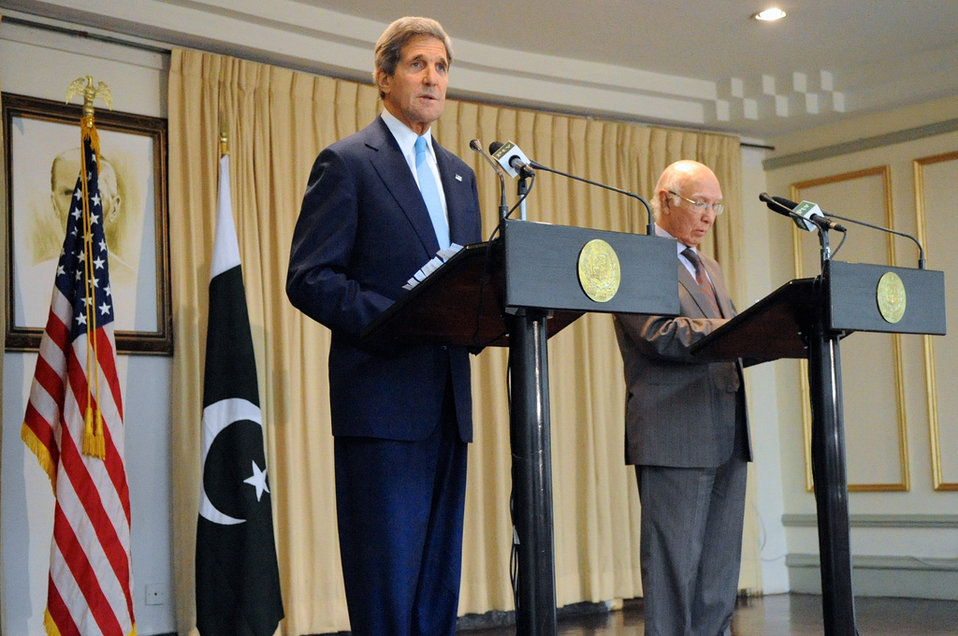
Secretary Kerry and Pakistani Advisor Aziz Address Reporters

U.S. Secretary of State John Kerry and Pakistani Foreign Affairs Advisor Sartaj Aziz address reporters during a news conference in Islamabad on August 1, 2013.